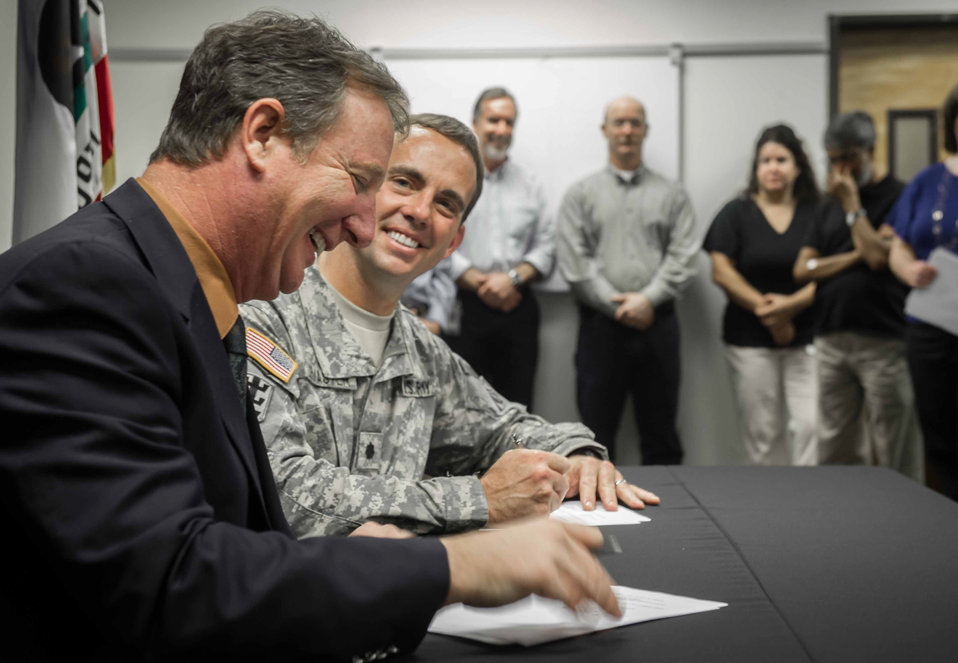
California joins national Silver Jackets disaster coordination program

Gary Bardini (left), California Department of Water Resources Deputy Director of Integrated Water Management, and U.S. Army Corps of Engineers Sacramento District Deputy Commander Lt. Col. Braden LeMaster officially appoint leaders of California’s new Silver Jackets program in Sacramento, Calif., Nov. 4, 2013. The program is designed to improve coordination, collaboration and communication among disaster-response agencies at all levels of government before a disaster strikes to hasten recovery. California is the 40th state to establish a Silver Jackets team.